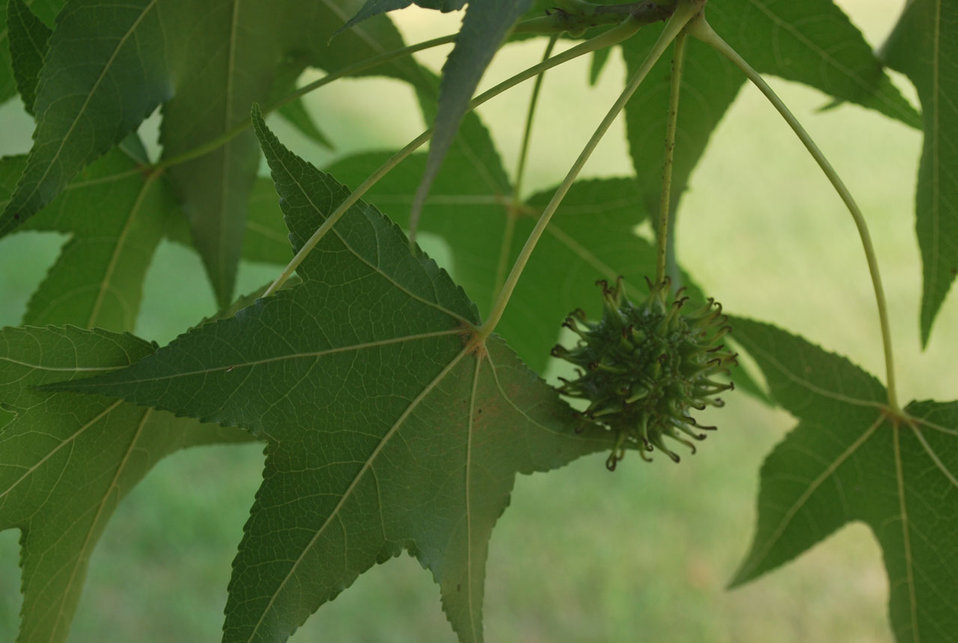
Leaf and seed

Tree leaves with seed.